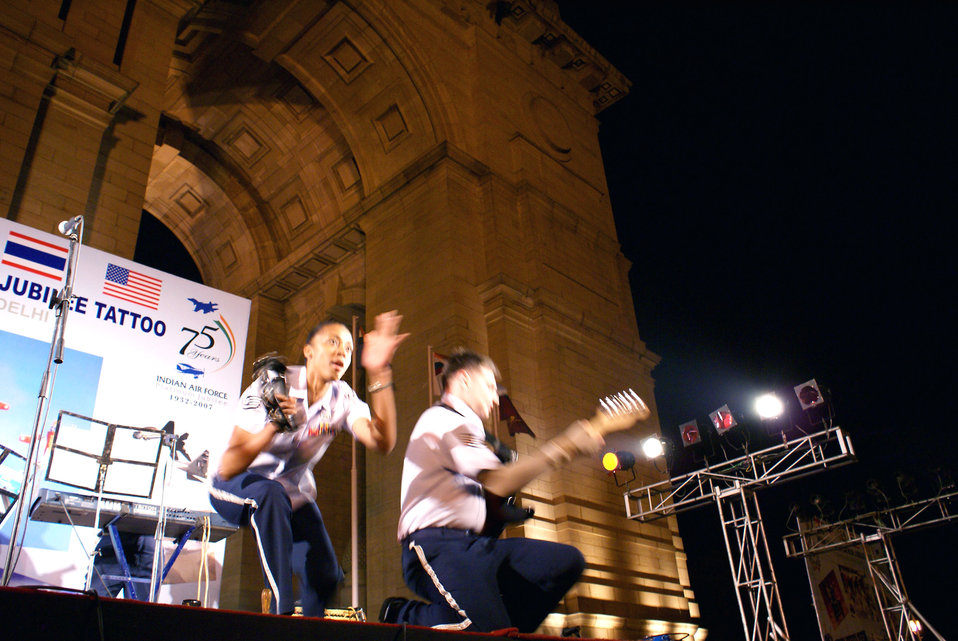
PACAF band entertains at Indian Air Force jubilee

Staff Sgt. Felita Rowe and Staff Sgt. Tim Rogers, members of the Pacific Air Forces rock band Pacific Trends, perform for the crowd gathered at the foot of the India Gate monument in New Delhi March 17. The Indian Air Force invited Pacific Trends to take part in the multinational celebration, which included military bands from India, Singapore, Sri Lanka and Thailand. The IAF celebrates its 75th birthday this year.